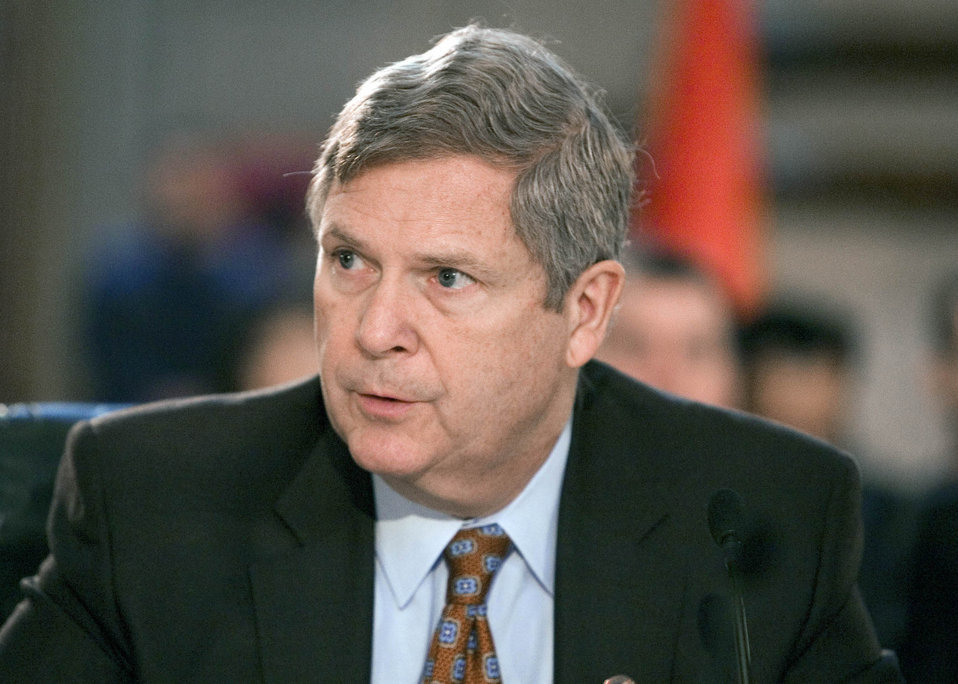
Agriculture Secretary Tom Vilsack speaks at the 21st session of the U.S. - China Joint Commission on Commerce and Trade (JCCT) held at the Department of Commerce, in Washington, D.C., on Wednesday, December 15, 2010. USDA photo 10di1573-7058.